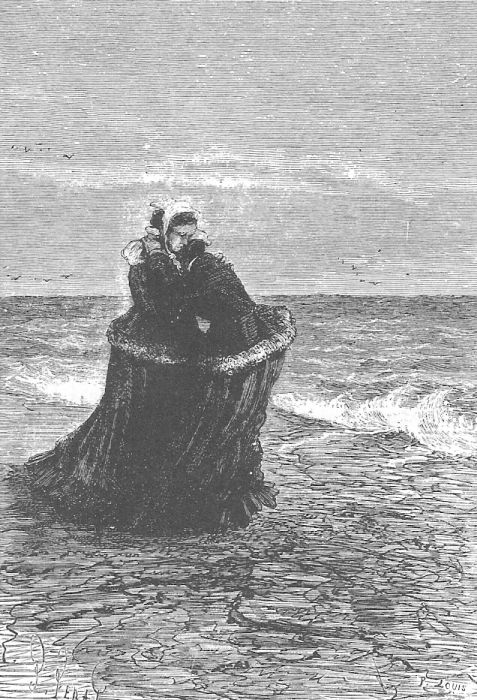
An illustration from Jules Verne's novel 'The Fur Country' (1871-72) drawn by Jules-Descartes Férat or Alfred Quesnay de Beaurepaire. Polski: Ilustracja powieści Juliusza Verne'a 'Wyspa błądząca' (także: 'W krainie białych niedźwiedzi', przekł. dosł.: 'Kraina futer'; 1871-72) autorstwa Julesa-Descartesa Férata lub Alfreda Quesnaya de Beaurepaire'a. Français : Jules Verne: 'Le Pays des fourrures' (1871-72), dessins par Jules-Descartes Férat ou Alfred Quesnay de Beaurepaire. Orginal description from the book: Français : Mrs. Paulina Barnett sanglotait !